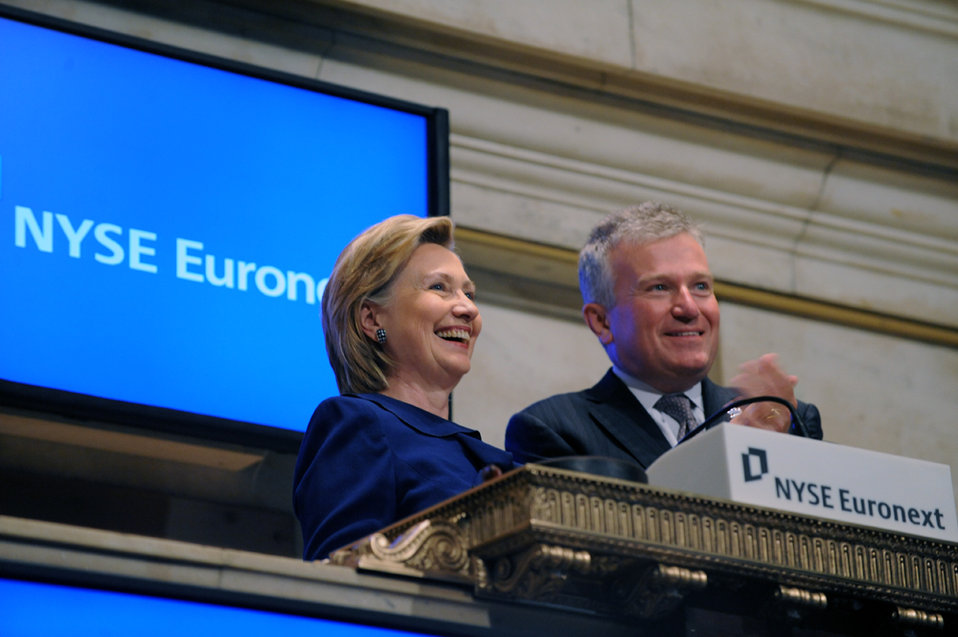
UNGA 2009: Secretary Clinton Meets With New York Stock Exchange CEO

U.S. Secretary of State Hillary Rodham Clinton on the floor of the New York Stock Exchange (NYSE) with NYSE Chief Executive Officer Duncan Niederauer during the 64th Session of the UN General Assembly in New York City, New York September 21, 2009.